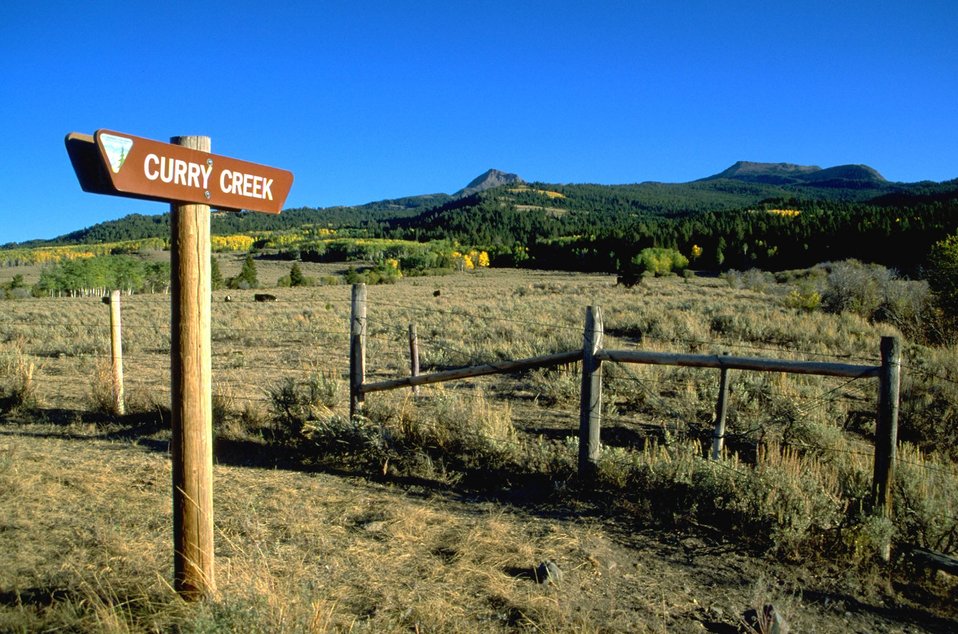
Centennial Mountains with Curry Creek sign in foreground